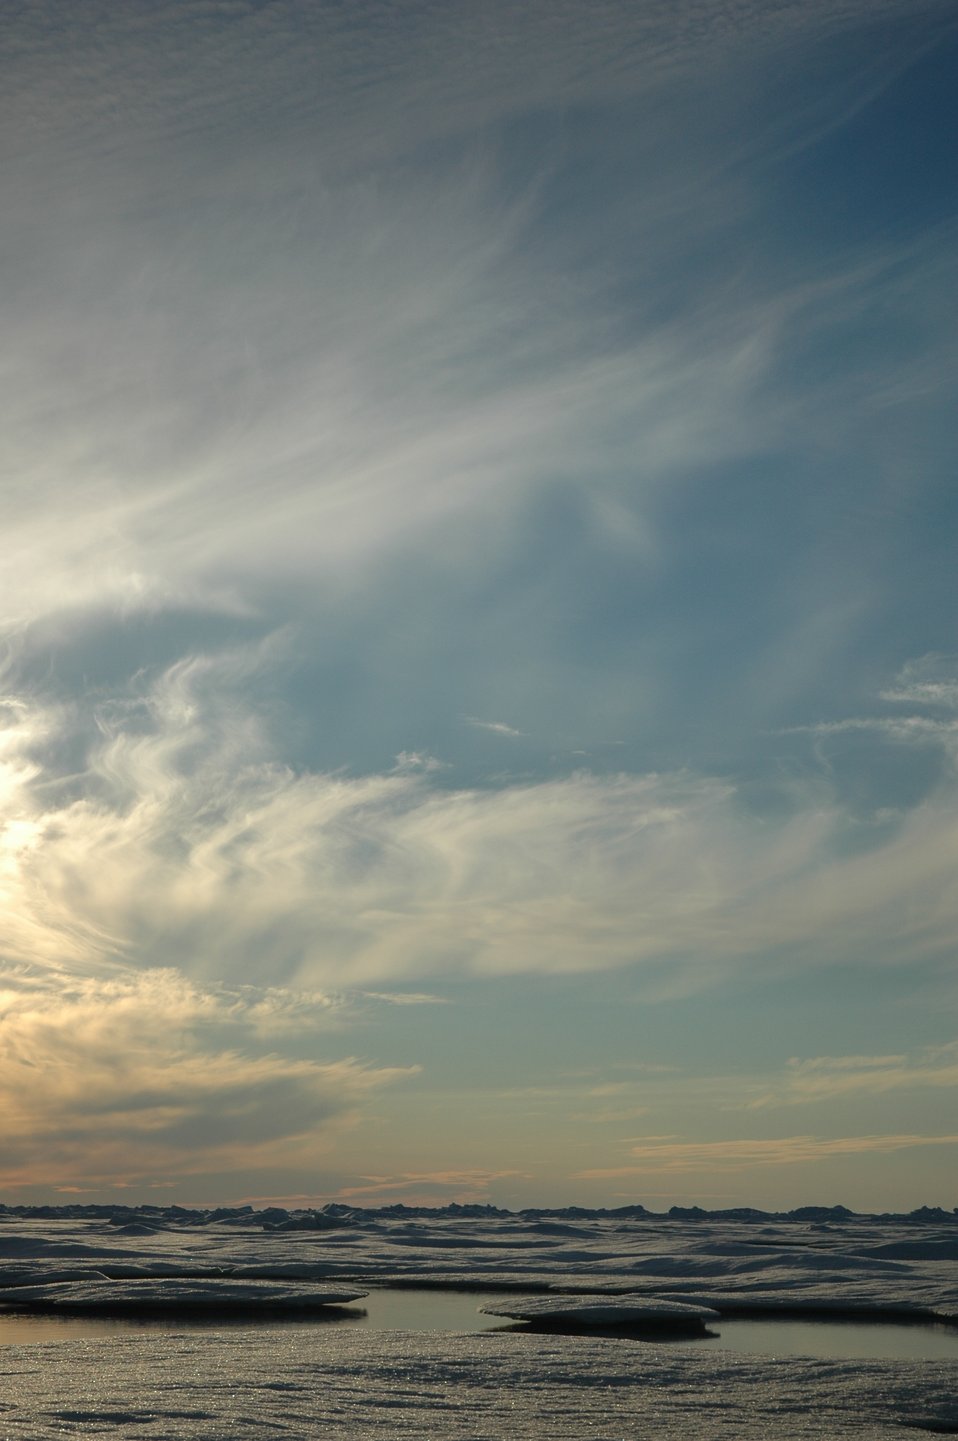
Midnight sun, melting Arctic ice, open leads, and cirrus clouds.